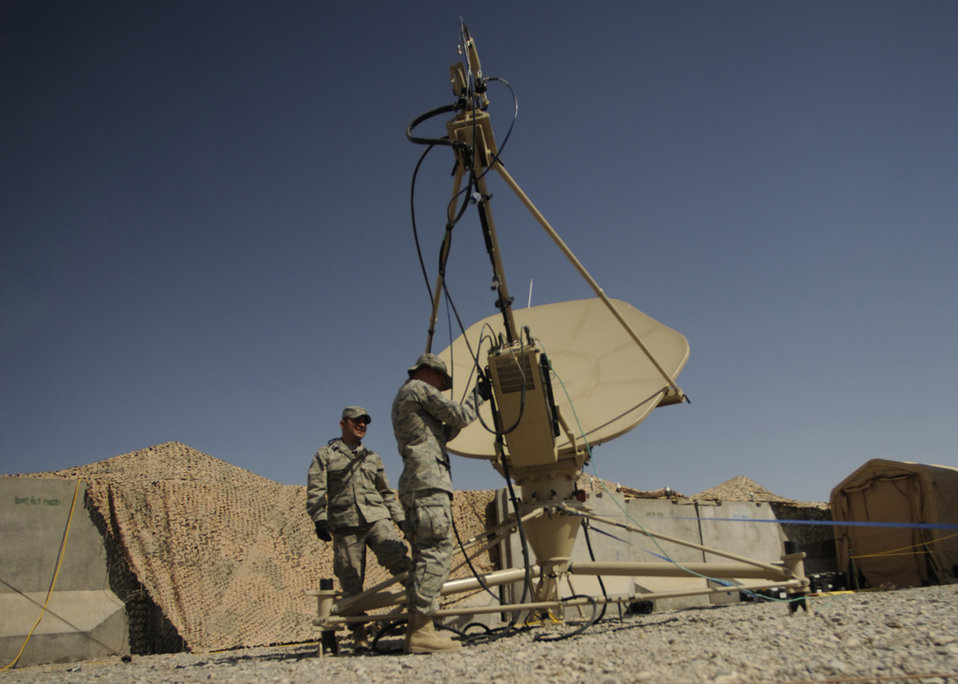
Operation Enduring Freedom

Senior Airman Sergio Saenz and Airman 1st Class Frank Fauland perform routine maintenance May 17 on a satellite dish at Kandahar Airfield, Afghanistan. Combat communications Airmen are responsible setting up and maintaining base telephone and internet communications. The Airmen are RF transmissions engineers and satellite communications technicians with the 451st Combat Communications Squadron at Kandahar.